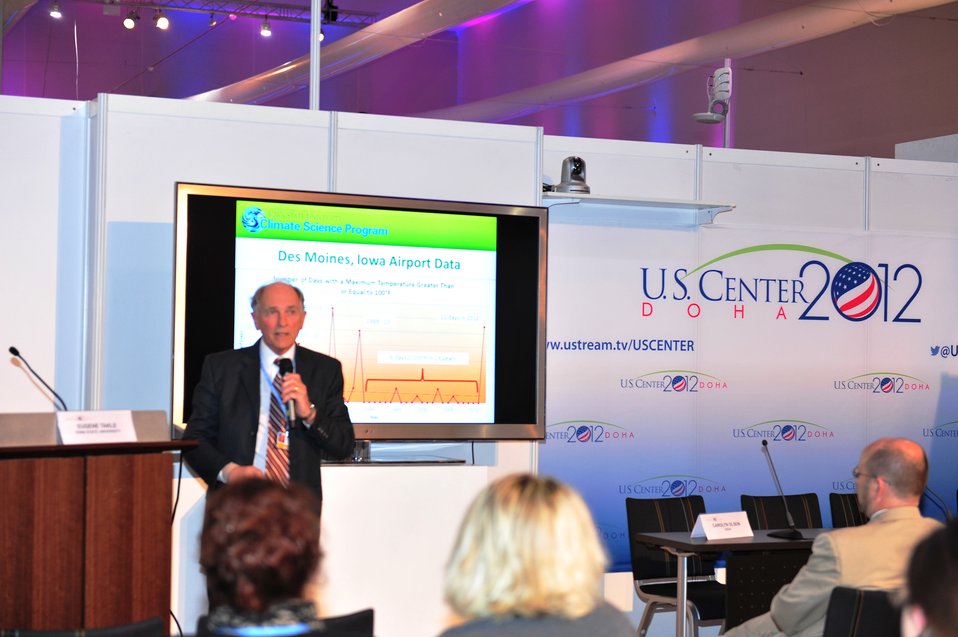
Dr. Takle Gives a Presentation at the U.S. Center

Dr. Eugene Takle of Iowa State University gives a presentation at the U.S. Center at the 18th Session of the Conference of the Parties to the UN Framework Convention on Climate Change (COP-18) in Doha, Qatar, November 28, 2012.